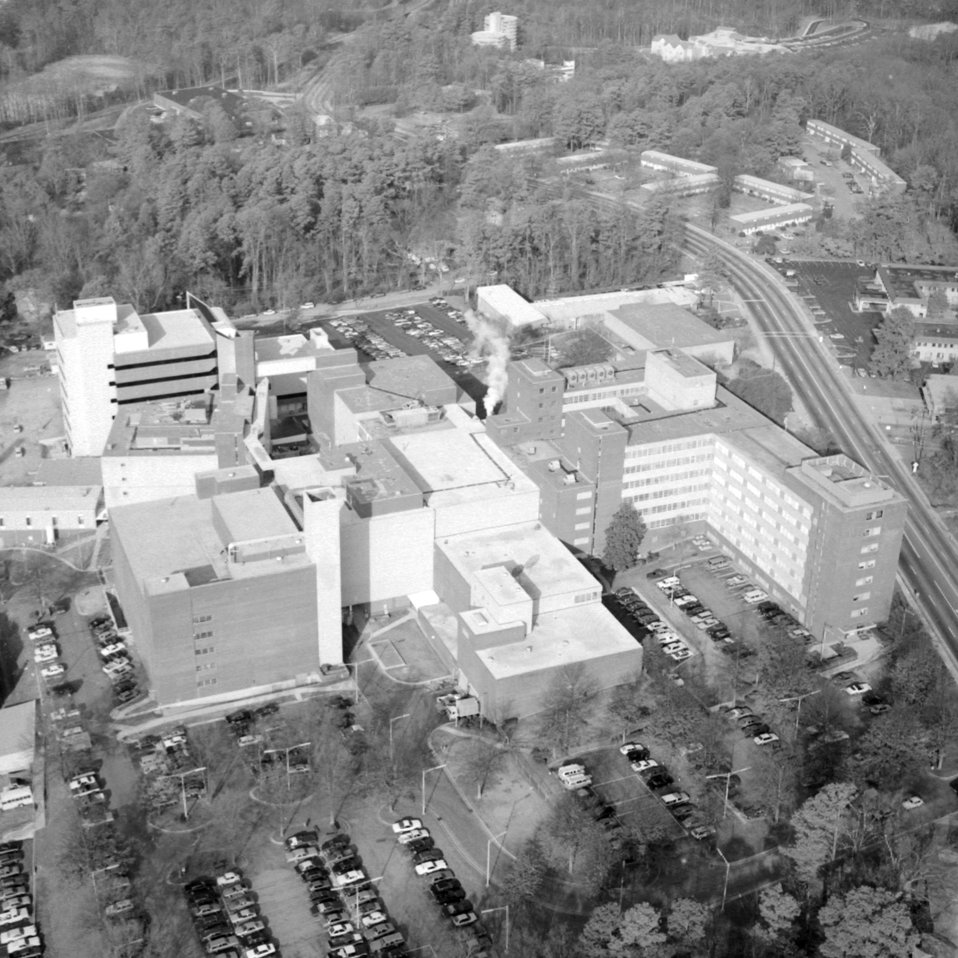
Aerial view (facing west) of the CDC Buildings on Clifton Road in Atlanta, GA.,1988.